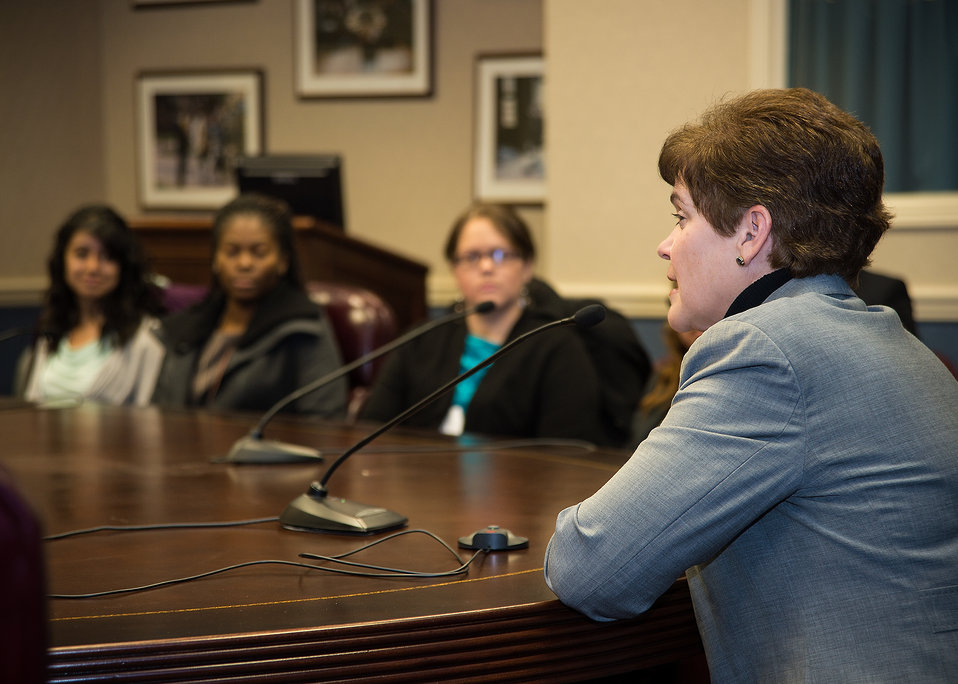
Agriculture Deputy Secretary Krysta Harden speaks to questions posed by students of the Hispanic Association of Colleges and Universities (HACU) National Internship Program Fall 2014 Interns during the Pathways Programs for Students and Recent Graduates to Federal Careers program at the U.S. Department of Agriculture (USDA) on Tuesday, Dec. 3, 2013 in Washington, D.C.